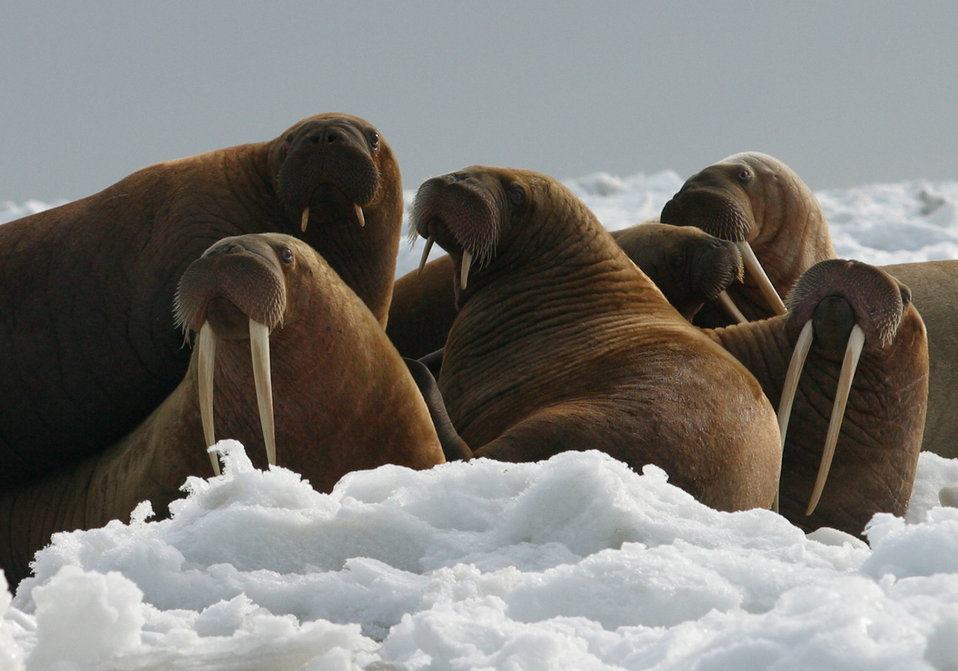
Walrus Cows and Yearlings on Ice

Walrus cows and yearlings resting on ice. The Walrus lives near relatively shallow water where it spends much of its time looking for benthic bivalve mollusks, its preferred diet. The Walrus is a social animal and spends much of its time on sea ice.